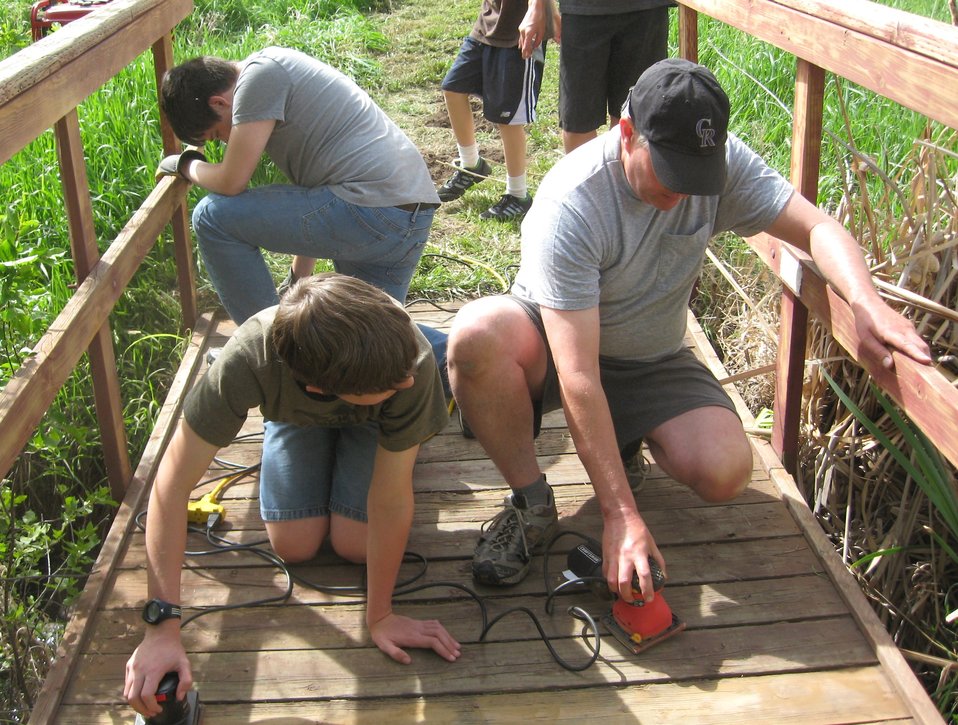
Eagle Scout - Stain